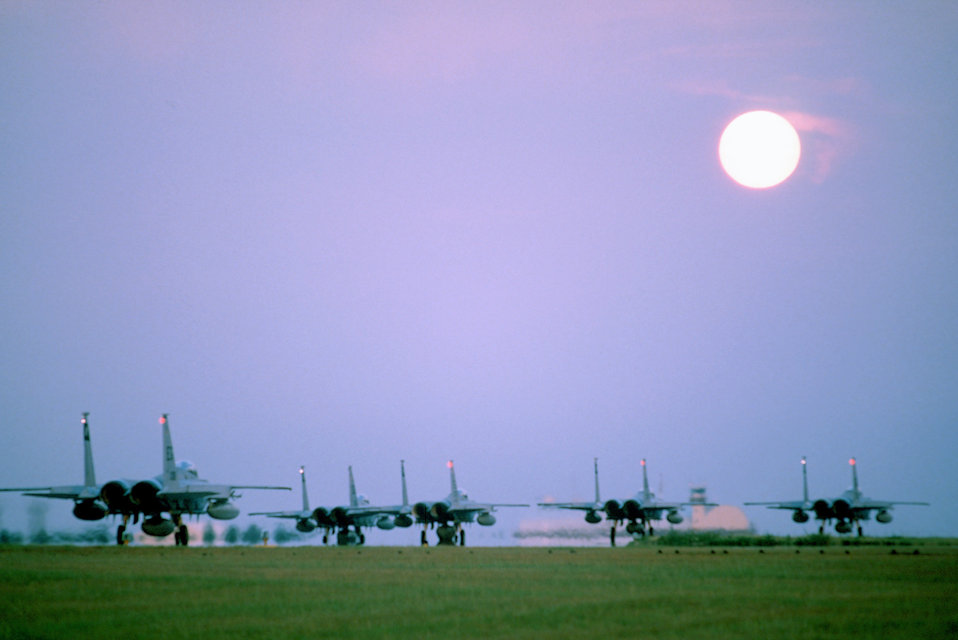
F-15C Eagle

1990's -- F-15C Eagle aircraft of the 58th Tactical Fighter Squadron takeoff on deployment to Saudi Arabia during Operation Desert Shield.